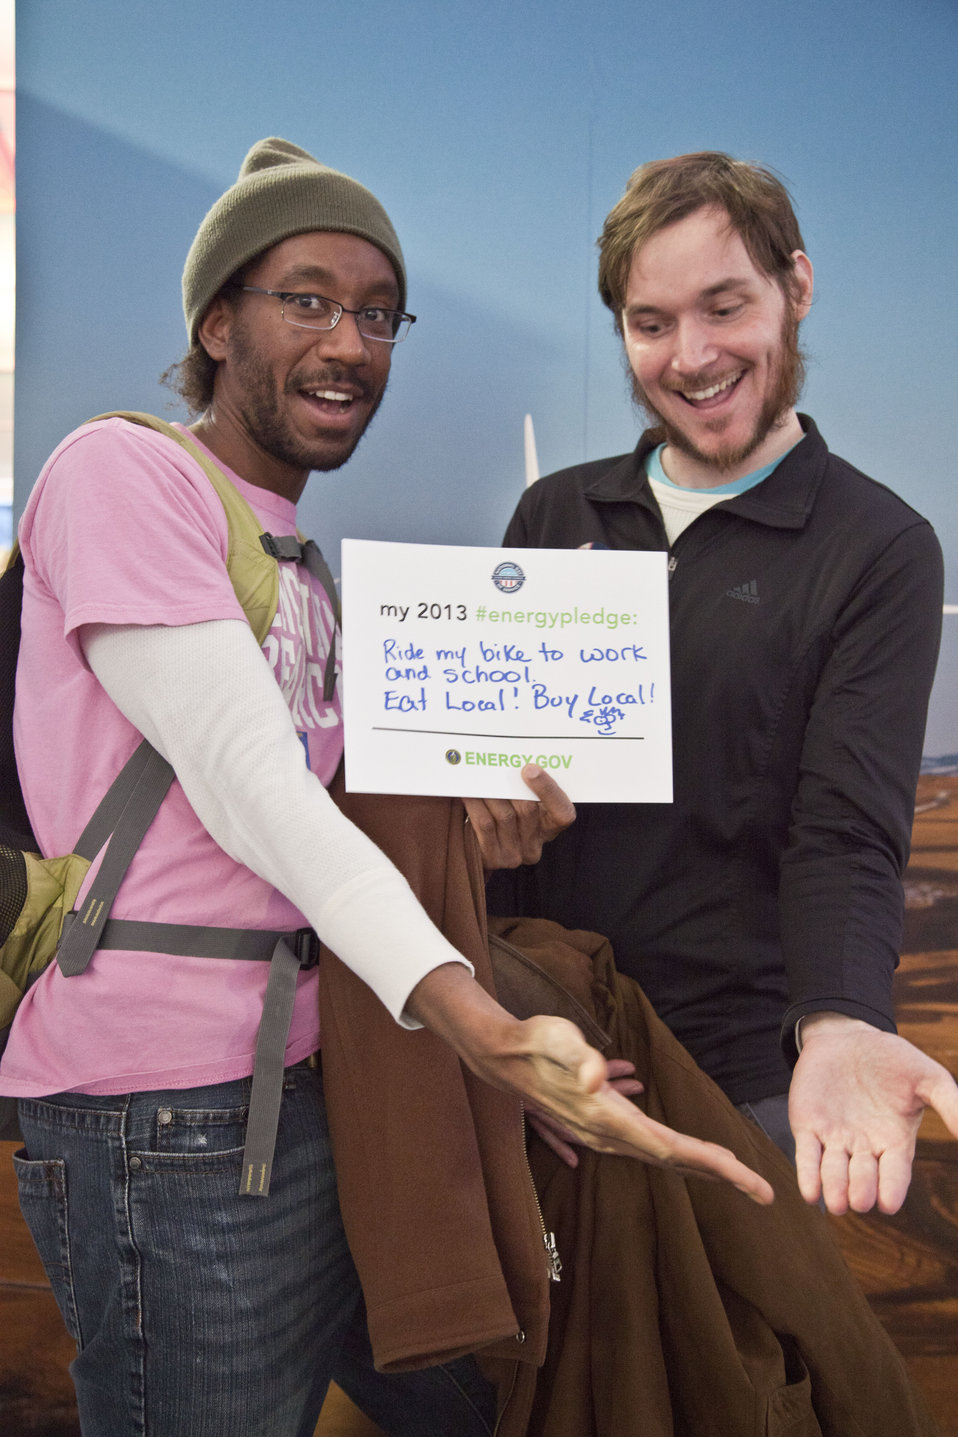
What's your #energypledge?